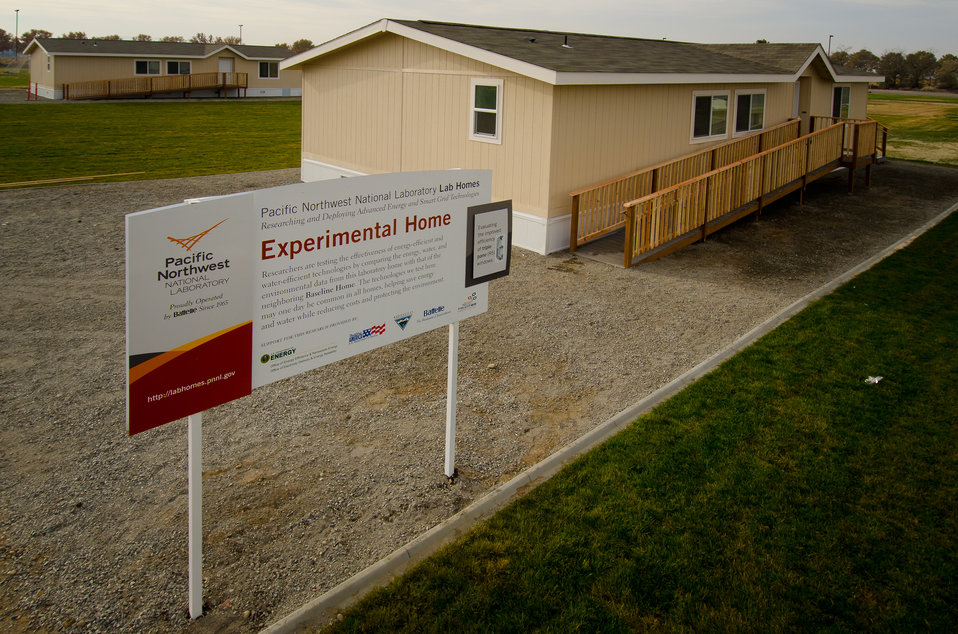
Two new research facilities at Pacific Northwest National Laboratory will serve as a test bed for studying energy efficient and smart homes.